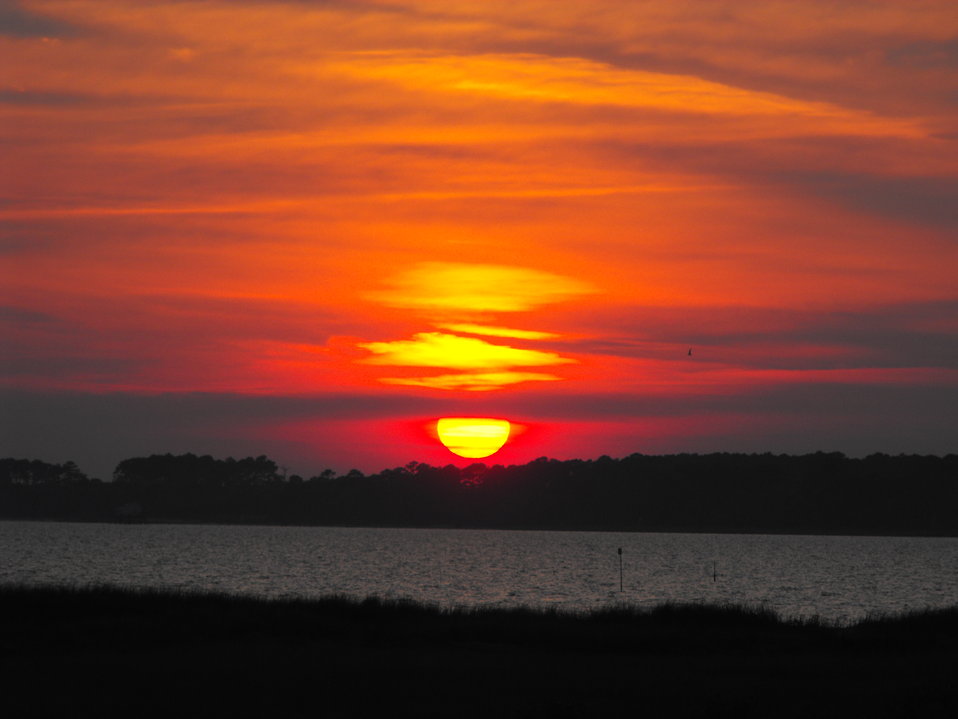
Sunset over Tom's Cove at Chincoteague National Wildlife Refuge / Assateague Island National Seashore.